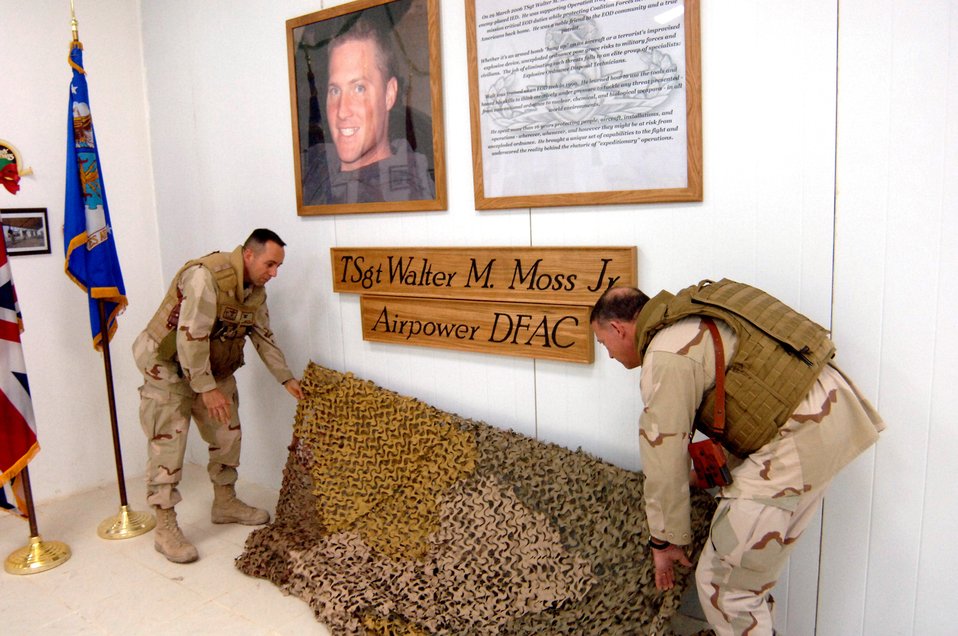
Air Force dining facility in Baghdad honors hero

Col. Gregory Marston (left) and Lt. Gen. Gary North take down camouflage netting to reveal the carved sign and memorial to Tech. Sgt. Walter Moss, an explosive ordnance disposal team leader who was deployed to Sather Air Base in Baghdad when he was killed in action in March. The unveiling was part of an opening ceremony Dec. 25 for the new dining facility at Sather named in honor of Sergeant Moss. General North is the U.S. Central Command Air Forces commander and Colonel Marston is the 447th Air Expeditionary Wing commander.